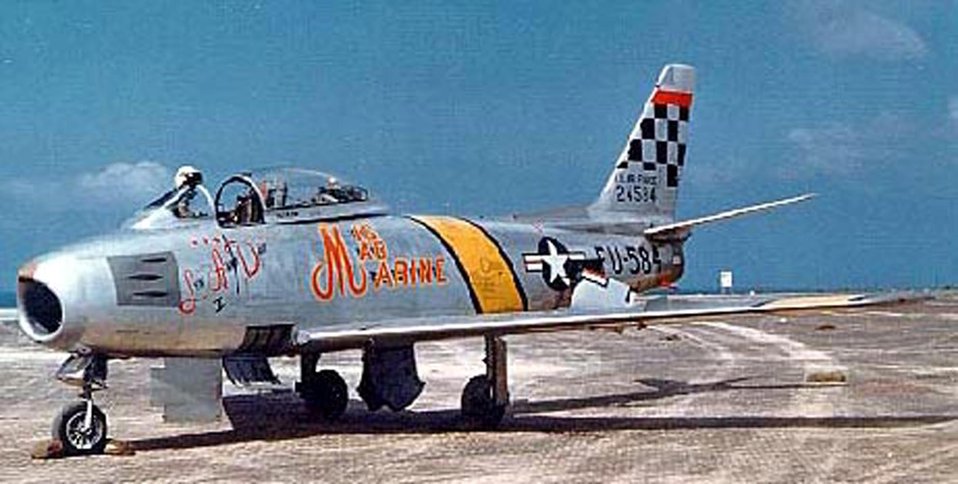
F-86 Sabre in Korea

Maj. John Glenn's F-86F Sabre,